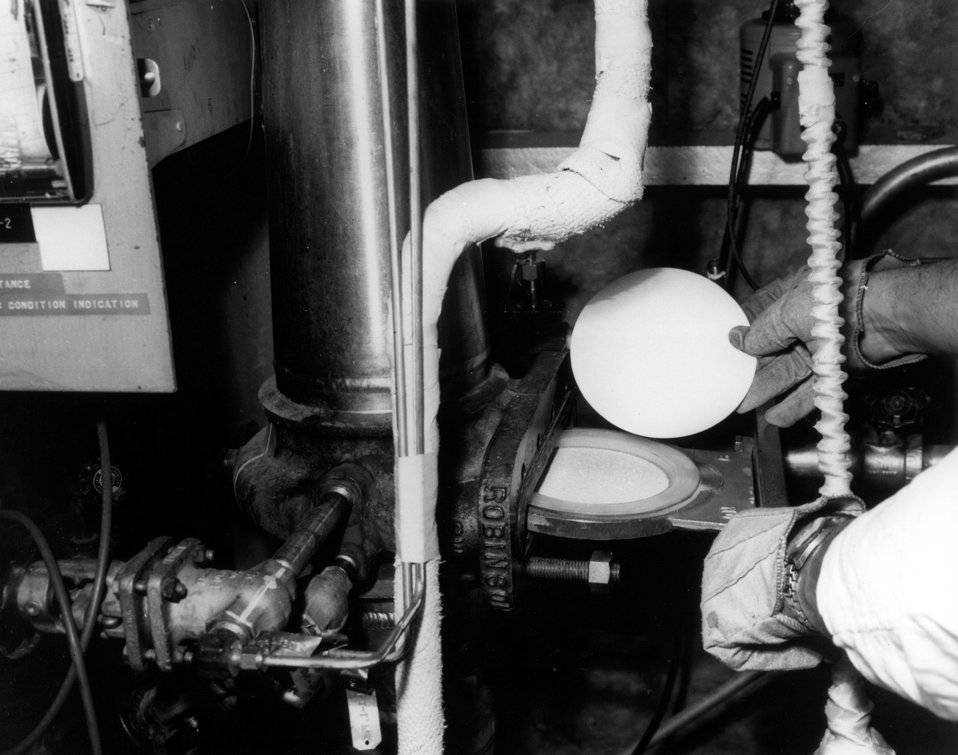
Off gas stacks at the Idaho Chemical Processing Plant contain replaceable filters which are easily changed and inspected. Circa 1974.